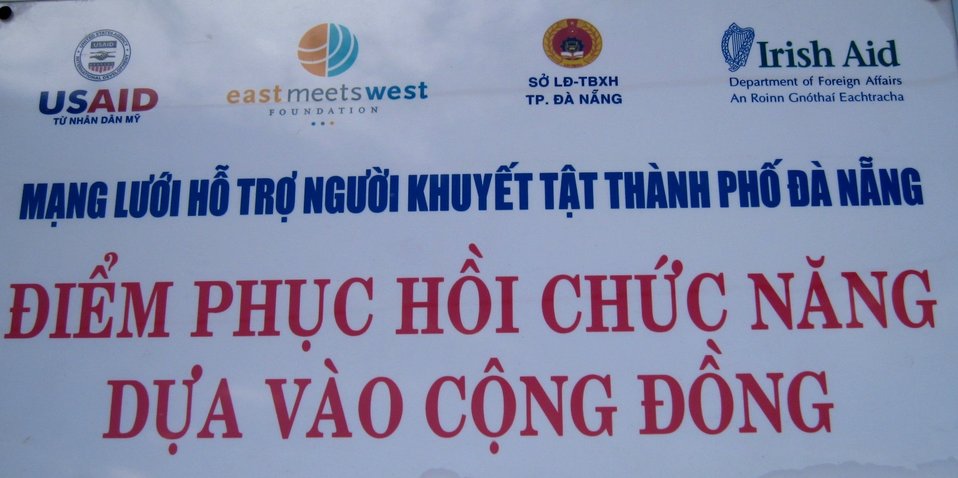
USAID supports a community rehabilitation unit in Danang.

Danang, June 10, 2013.